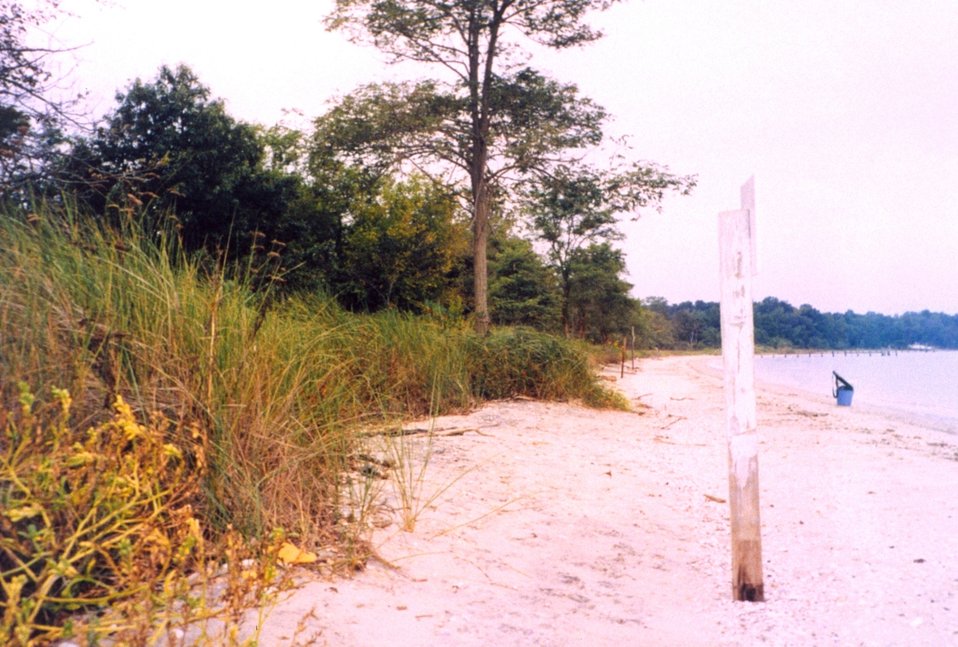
Patuxent River shoreline.